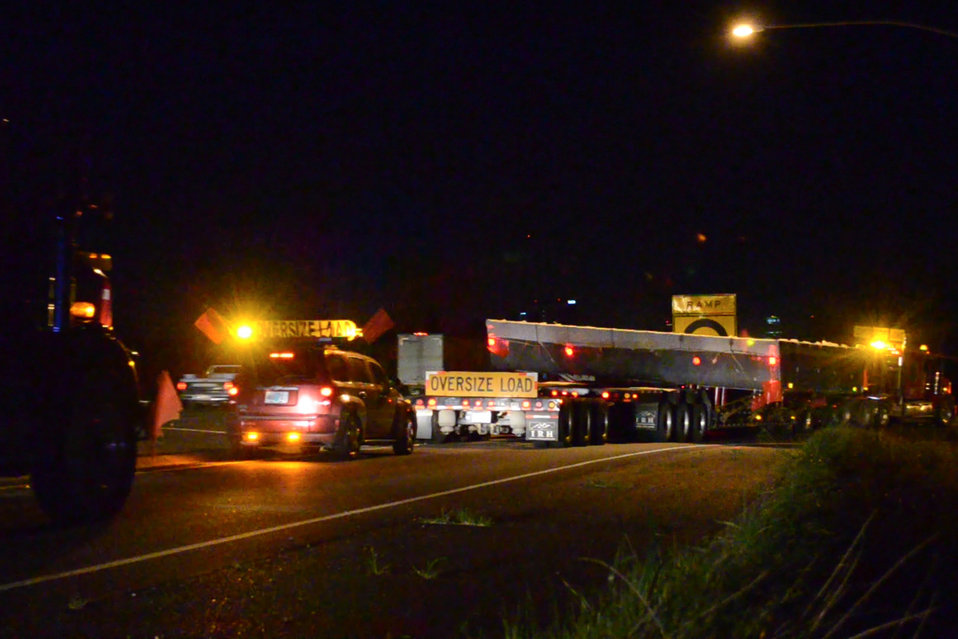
First giant gate arrives for Folsom Dam auxiliary spillway

The first of 12 giant gates for the new auxiliary spillway at Folsom Dam makes a slow, tricky turn from Interstate 5 to I-80 in Sacramento, Calif., March 13, 2014, after a 600-mile journey from the Oregon Iron Works facility in Vancouver, Wash. The auxiliary spillway project is part of the Joint Federal Project, a $900-million cooperative effort to improve the safety of Folsom Dam and reduce flood risk for the Sacramento area. (U.S. Army video image by Todd Plain/Released)